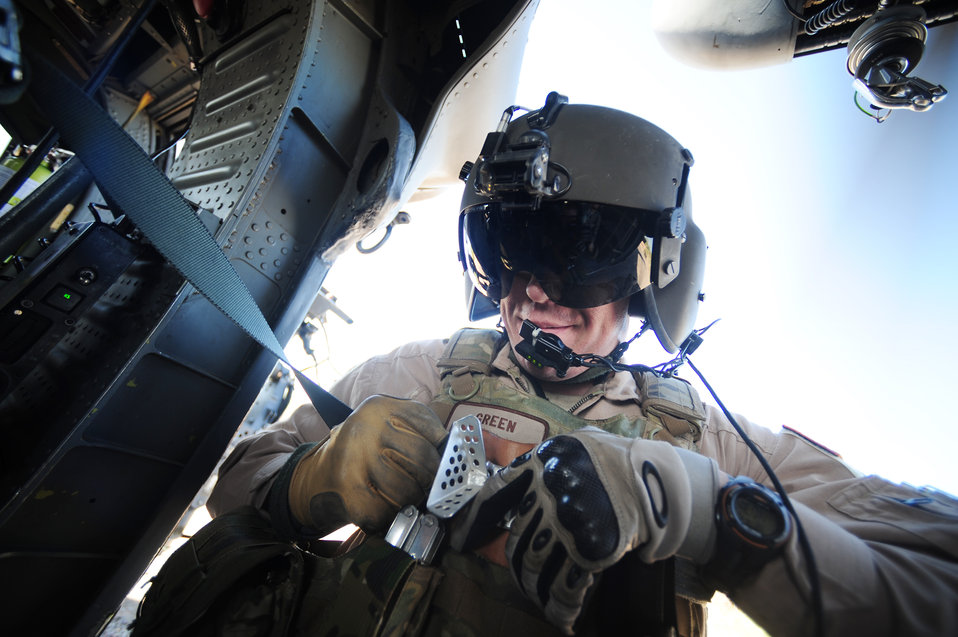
Angel Thunder 2010

Staff Sgt. Andrew Green puts on his gunner's belt, a personal protective device that secures him, during Angel Thunder 2010 April 15, 2010, near Davis-Monthan Air Force Base, Ariz. Angel Thunder 2010 will be the largest personnel recovery and combat search and rescue exercise to date. Sergeant Green is an HH-60 flight engineer with the 55th Rescue Squadron at Davis-Monthan AFB.